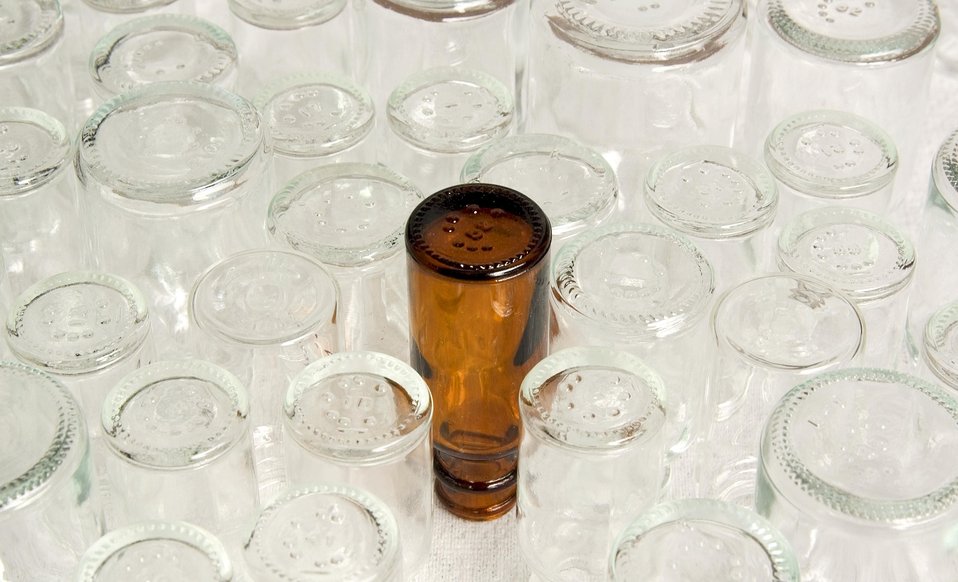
At Ames Laboratory, dark sample vials are required for light-sensitive metal complexes used in Ames Laboratory's unique research on the catalytic activation on oxygen.